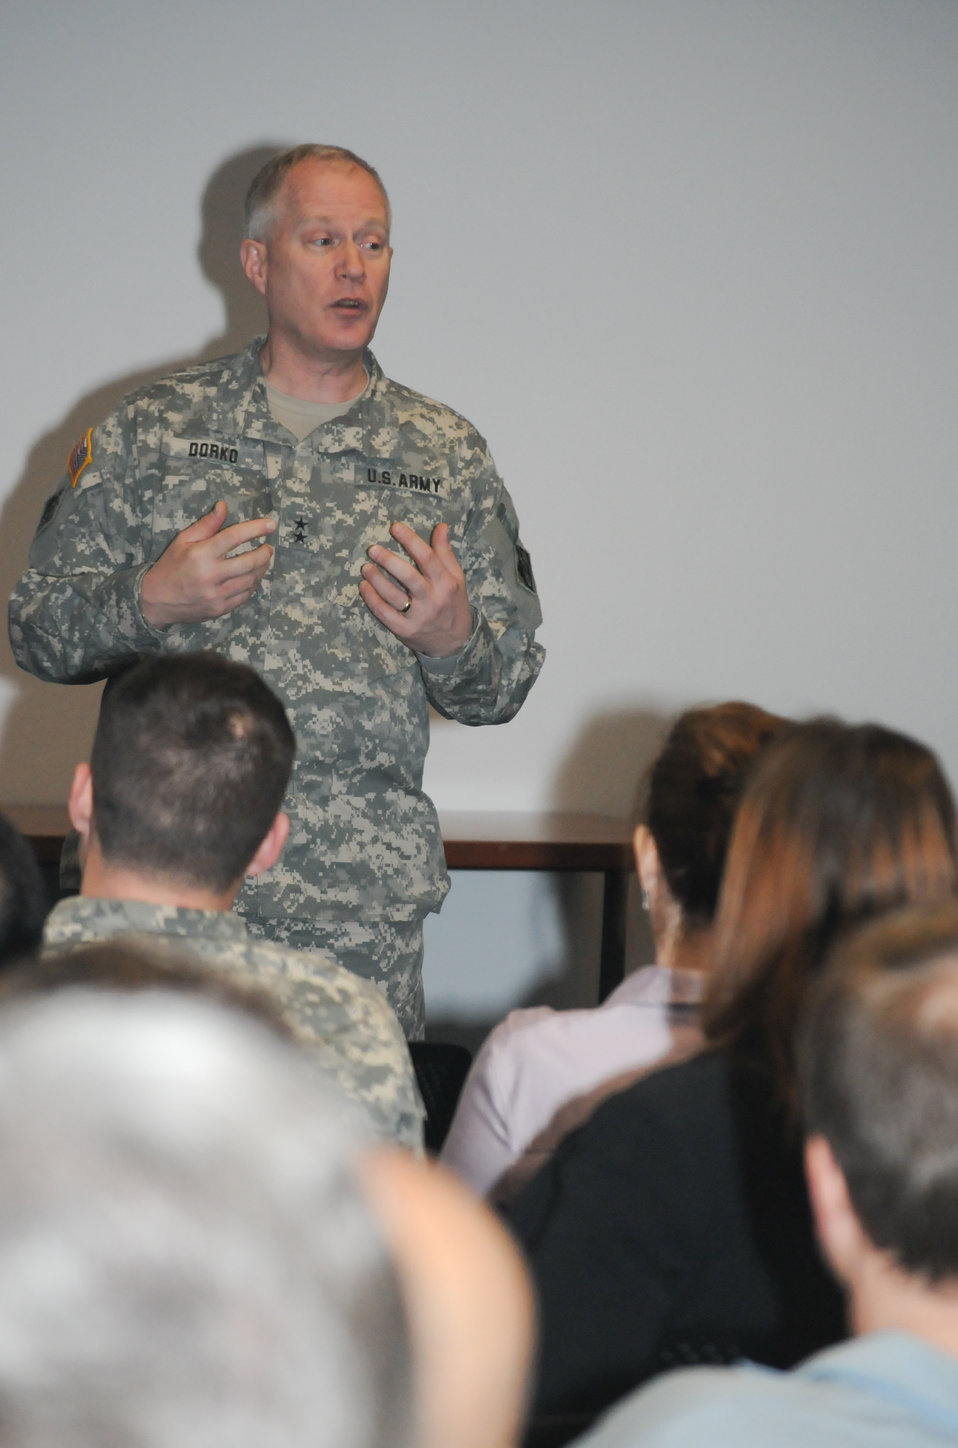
Maj. Gen. Jeffrey J. Dorko, the Deputy Commanding General for Military and International Operations for the U.S. Army Corps of Engineers, speaks with employees of the Sacramento District during a town hall meeting at the district headquarters building March 22.